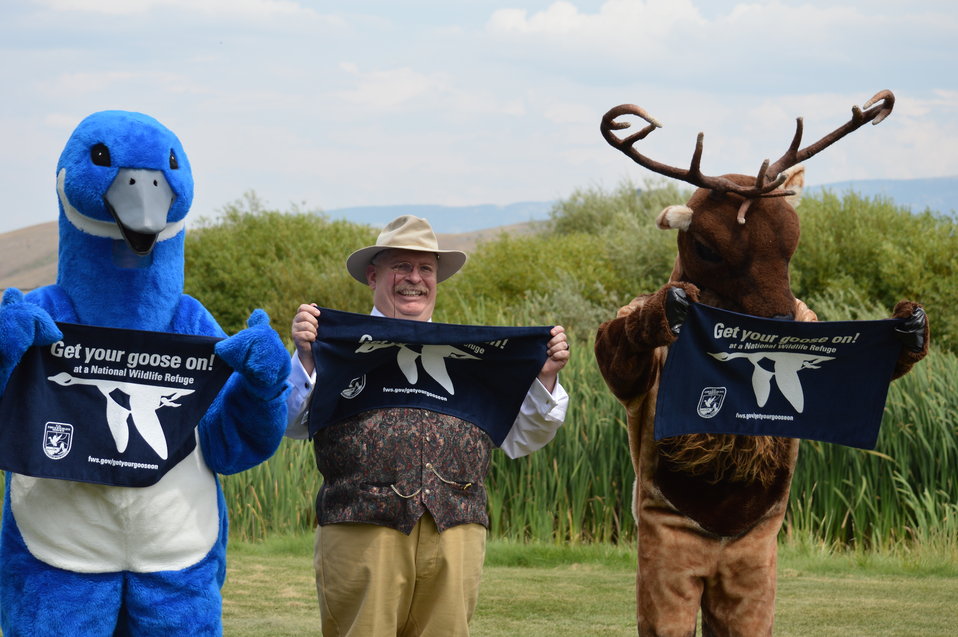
Get Your Goose On! - National Elk Refuge Style

On August 10, 2012 the U.S. Fish and Wildlife Service and Partners celebrated the 100 year anniversary of the establishment of the National Elk Refuge. In these photos, young attendees, along with Puddles the Blue Goose and the National Elk Refuge's mascot, showed us how to Get Your Goose On! with style.